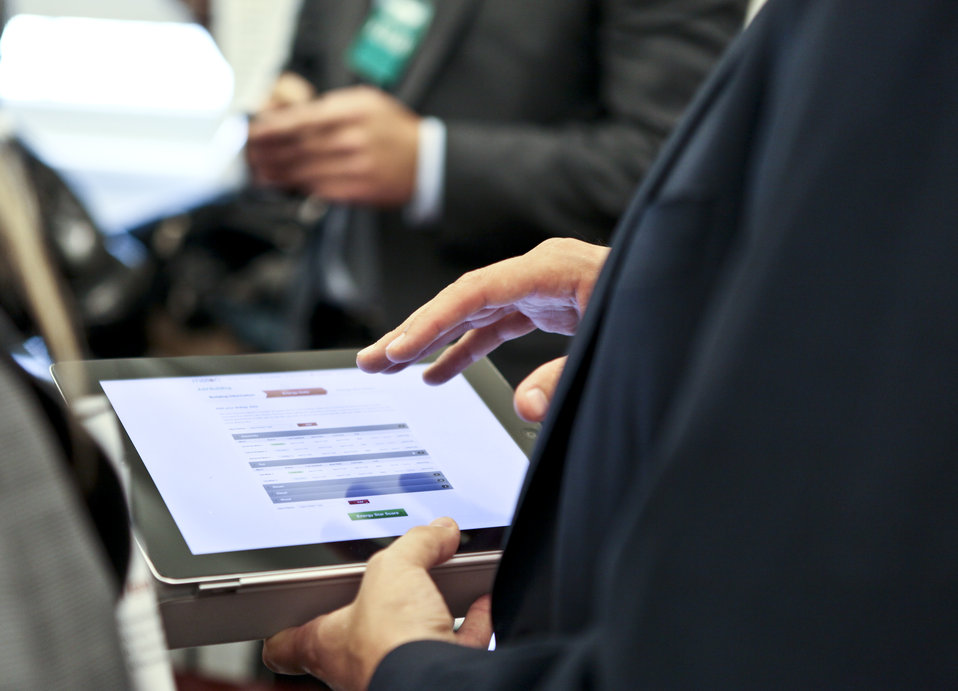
Checking out an app at the Energy Datapalooza